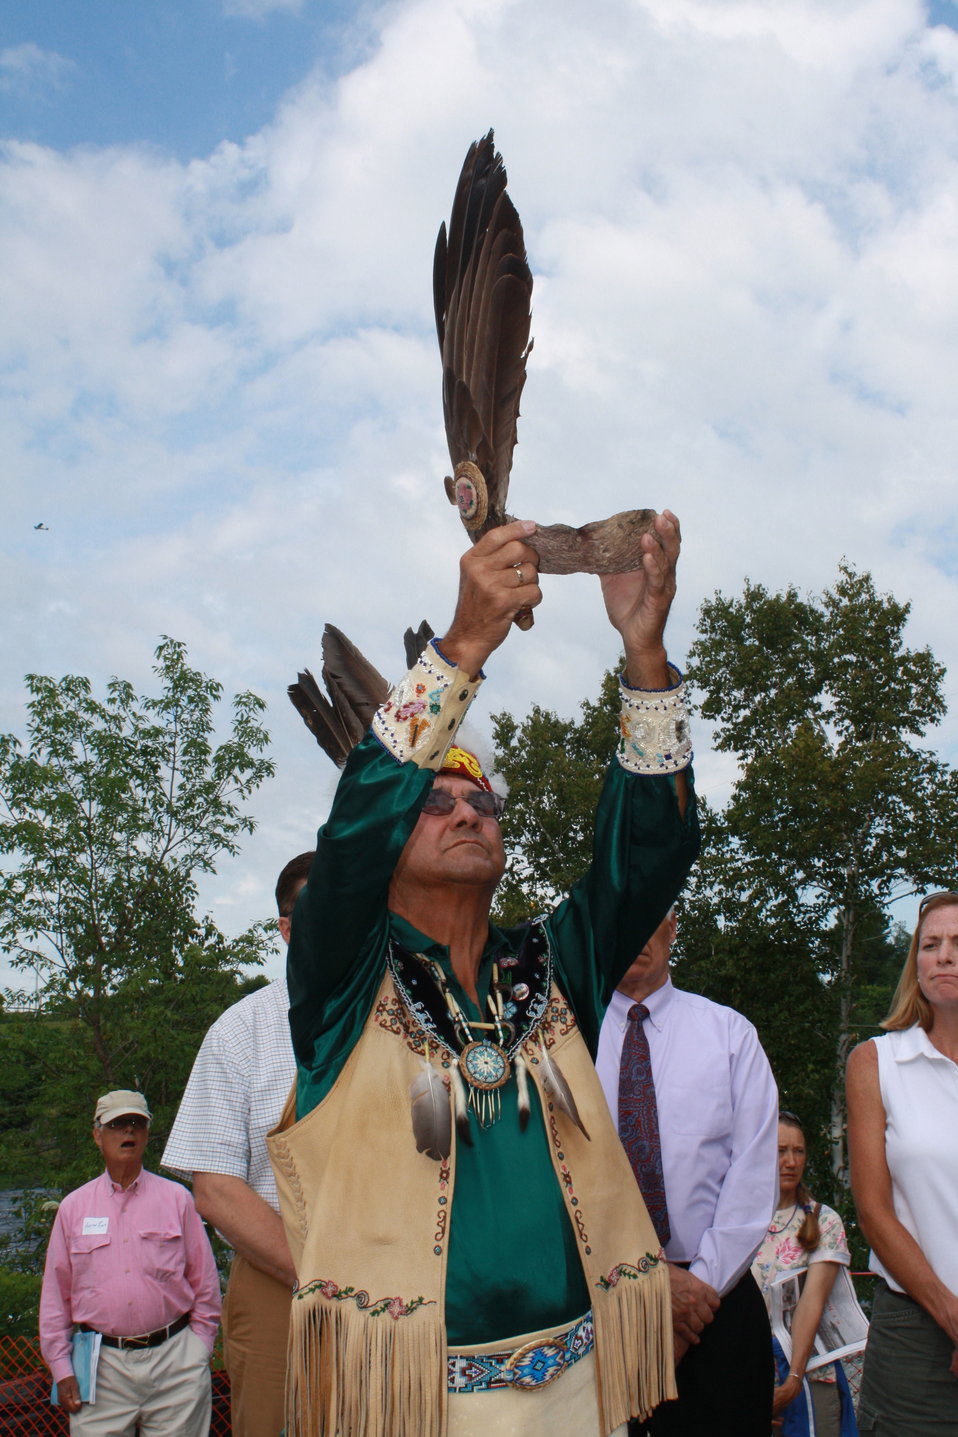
Veazie Dam Removal

Penobscot Indian Nation Elder Butch Phillips continues the traditional smudging ceremony.